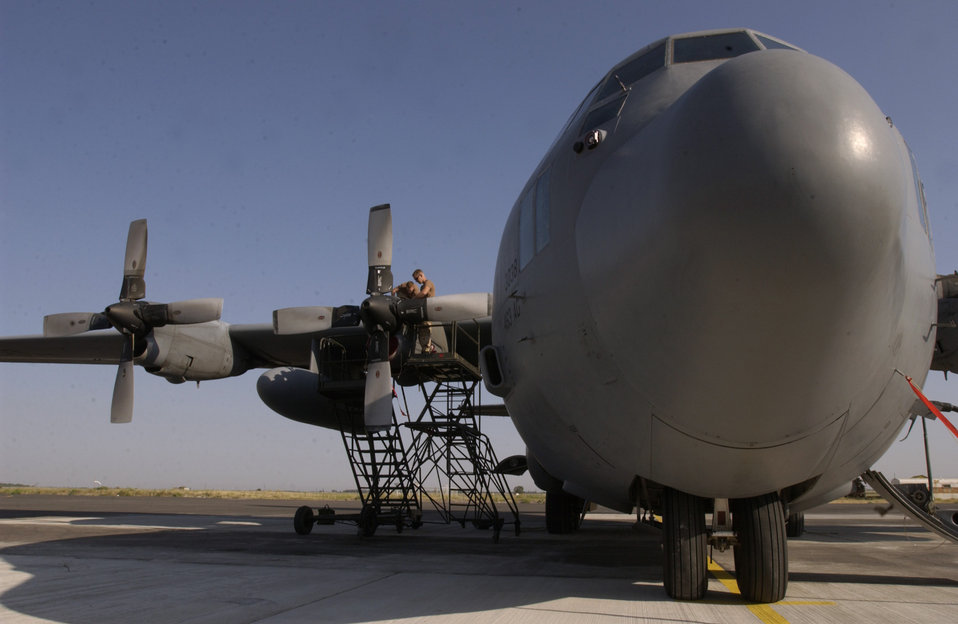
Maintaining the Herc

MANAS AIR BASE, Kyrgyzstan -- Senior Airman Derek Smith and Airman 1st Class Alex O'Donnell troubleshoot the source of an indicator light malfunction on the No. 3 engine on a C-130 Hercules here. They are aircraft maintainers assigned to the 376th Expeditionary Air Maintenance Squadron and are deployed from Little Rock Air Force Base, Ark.